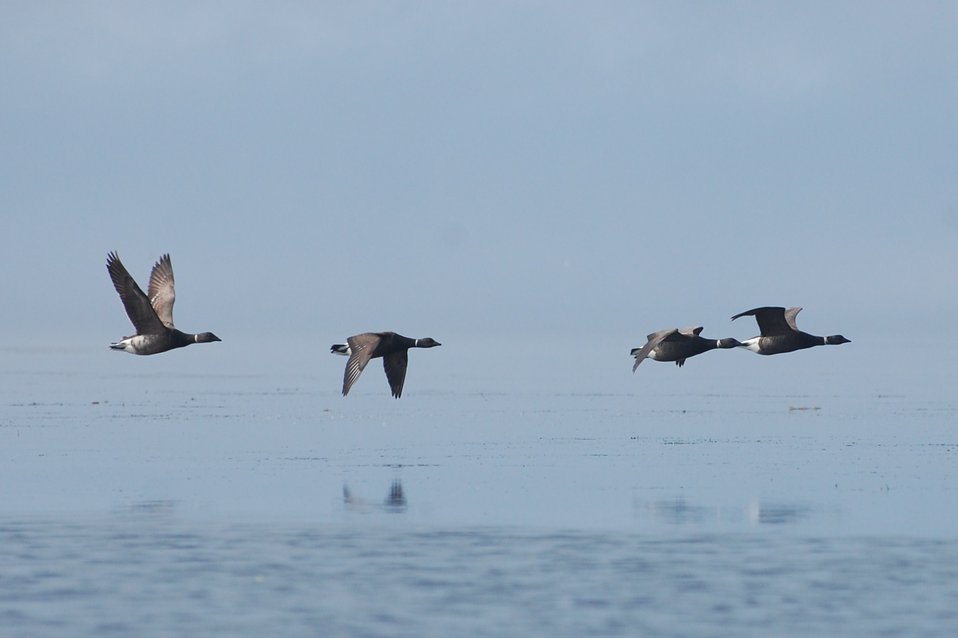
Brant Izembek Lagoon

Brant, Izembek Lagoon, Izembek National Wildlife Refuge